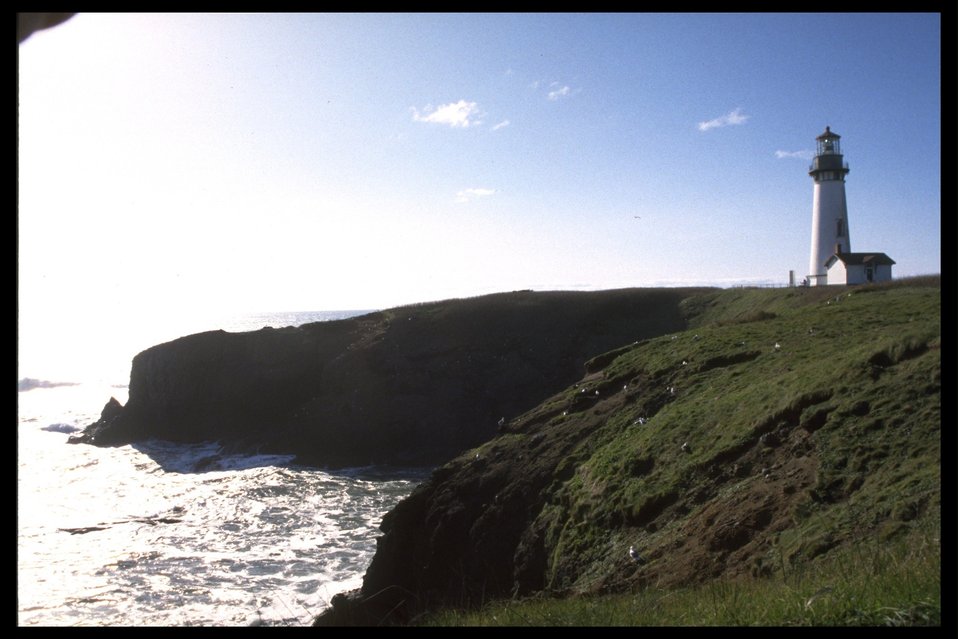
Yaquina Head Lighthouse.